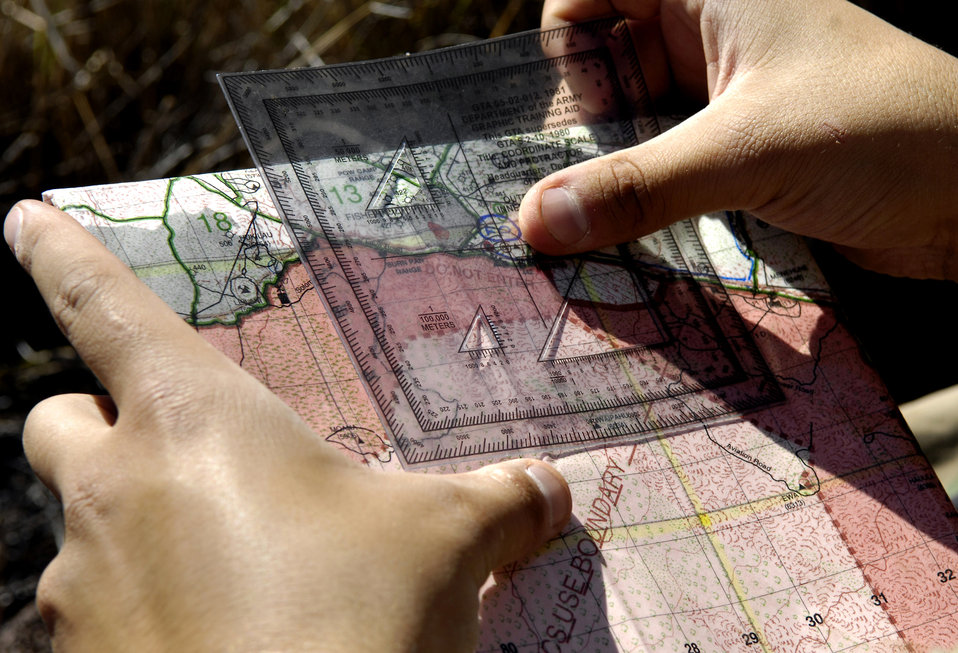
B-2s train with JTACs, drop bombs on target

Staff Sgt. George Earhart plots coordinates on a range map Oct. 23 at the Pohakuloa Training Area, Hawaii. Sergeant Earhart is a tactical air controller from the 25th Air Support Operations Squadron, Wheeler Army Air Field, Hawaii.